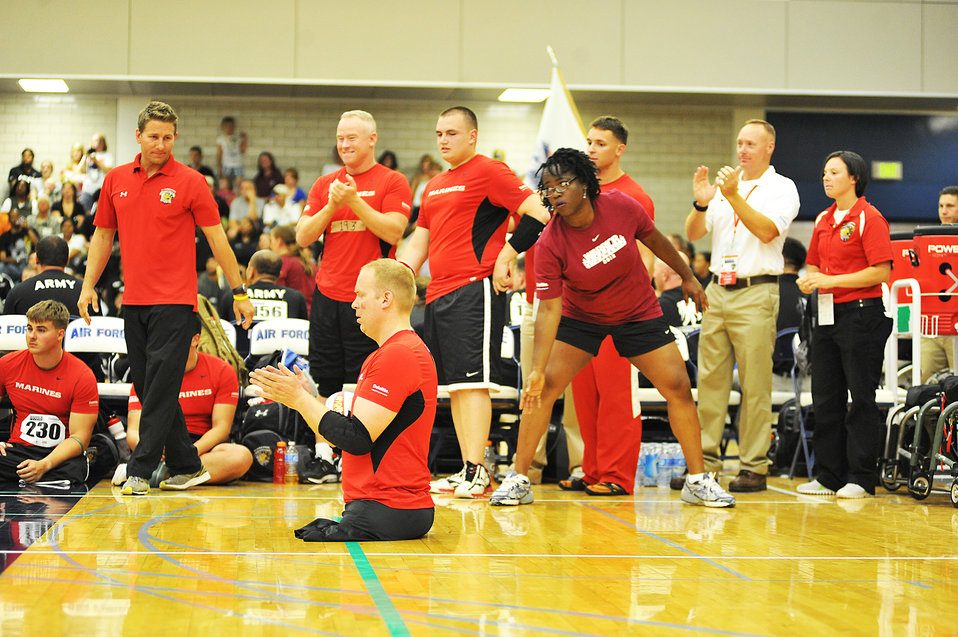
Warrior Games

Leslie Dillon, center right, a volunteer, waits for the ball as she assist during a sitting volleyball game between the Navy and the Marine Corps teams during Warrior Games 2012 at the U.S. Air Force Academy in Colorado Springs, Colo., May 3, 2012.